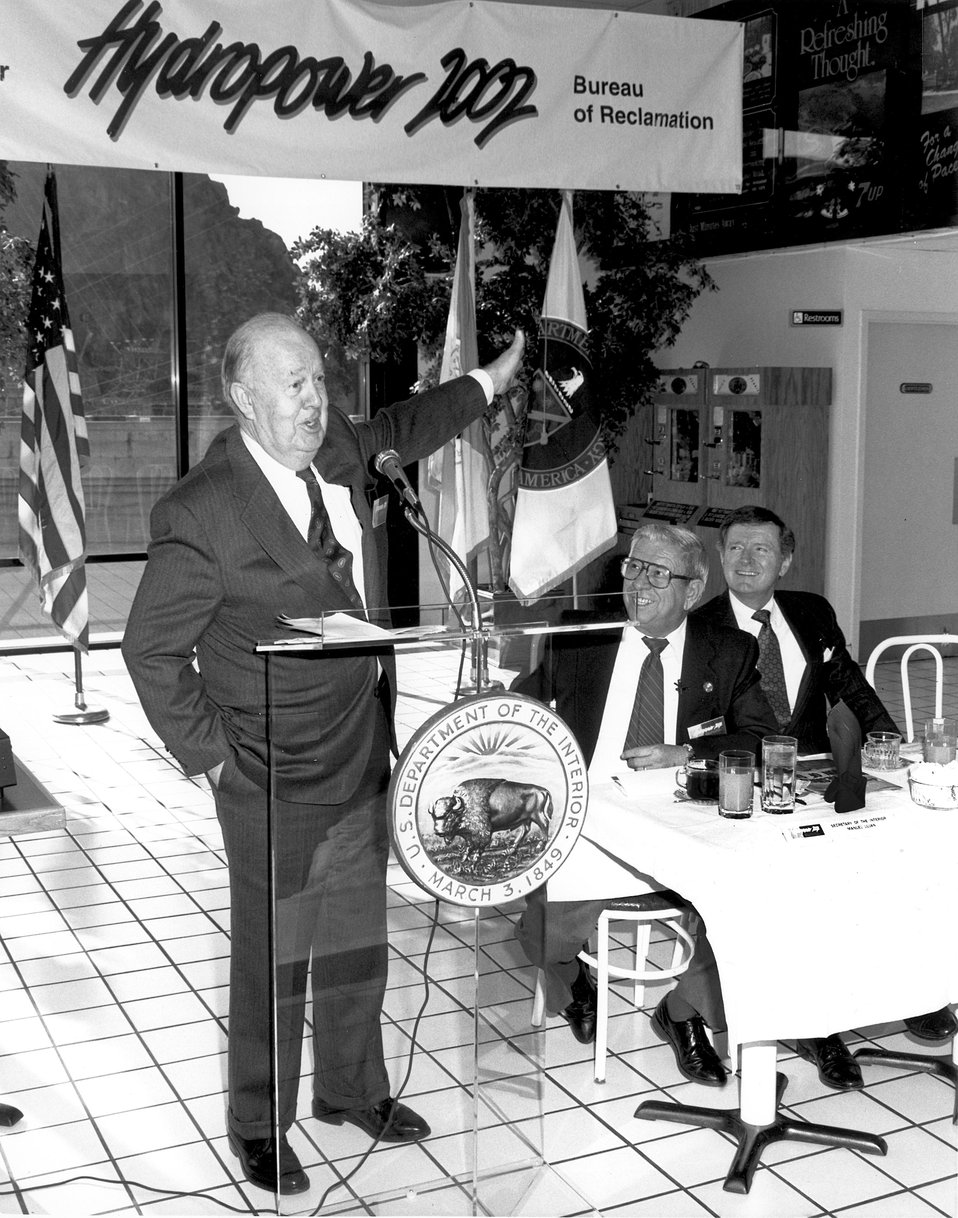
John Sayre, Interior Assistant Secretary for Water and Science, is shown at the podium during the unveiling ceremony of a new energy initiative, Hydropower 2002. c. 1992